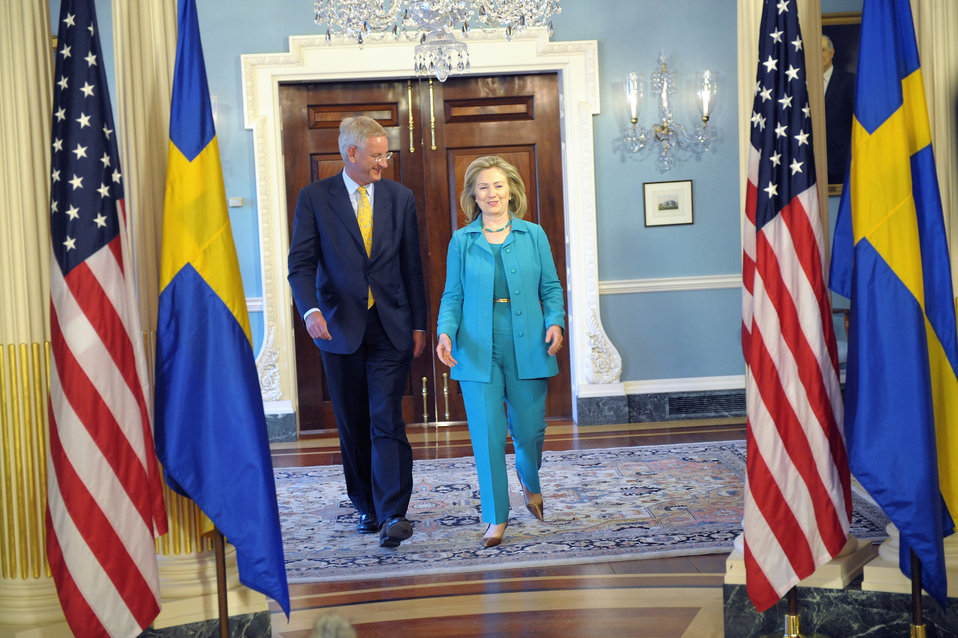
Secretary Clinton Holds a Bilateral Meeting With Swedish Foreign Minister Bildt

U.S. Secretary of State Hillary Rodham Clinton holds a bilateral meeting with Swedish Foreign Minister Carl Bildt, at the U.S. Department of State in Washington, D.C., on April 29, 2011.